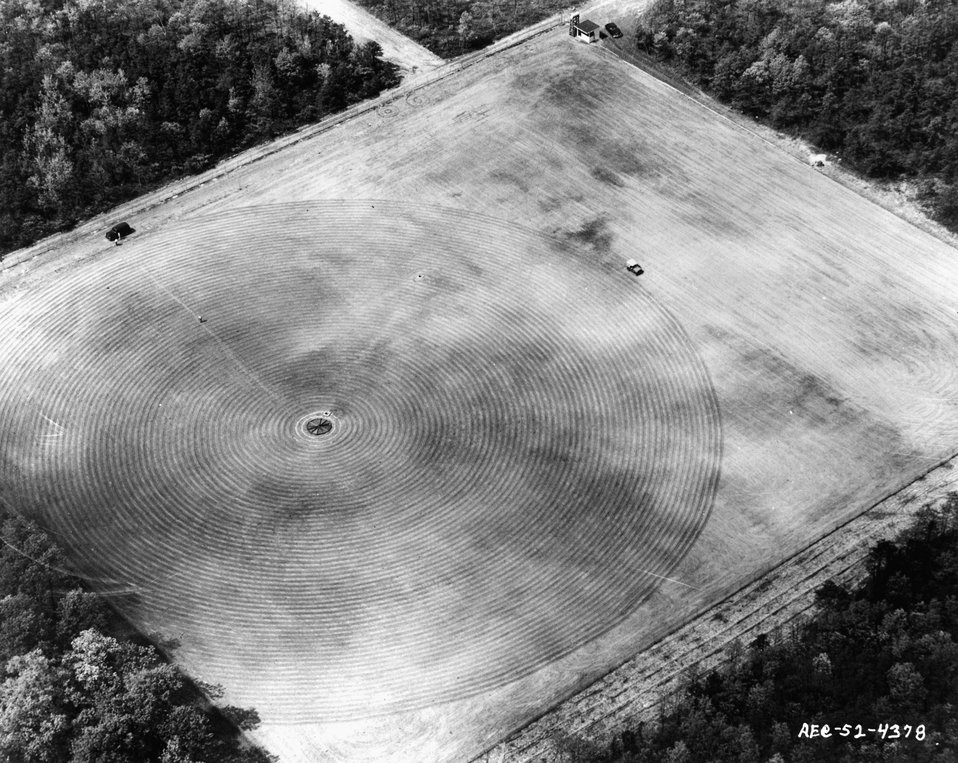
Aerial photograph of the cobalt radiation field without any plants growing. c. 1952